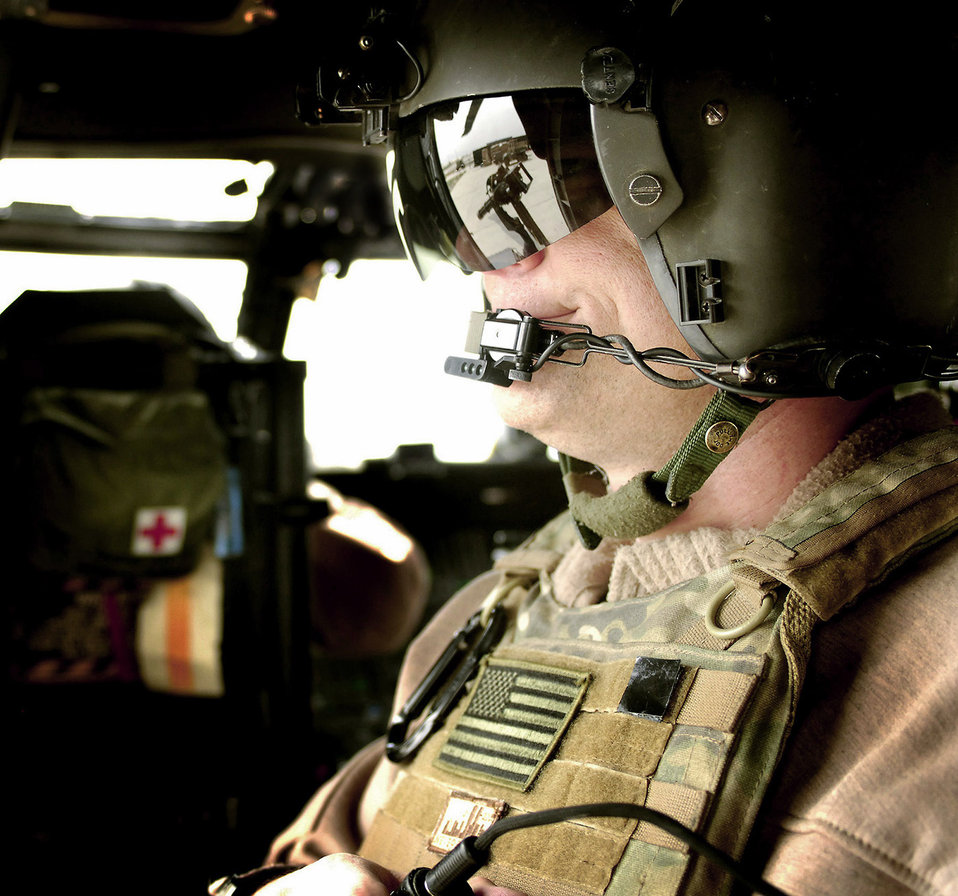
New York Guardsmen stay on alert to save lives

Senior Master Sgt. Glen Berg mans his HH-60 Pave Hawk rail gun before taking off on a training mission April 20 at Bagram Airfield, Afghanistan. Sergeant Berg is a 101st Expeditionary Rescue Squadron aerial gunner.